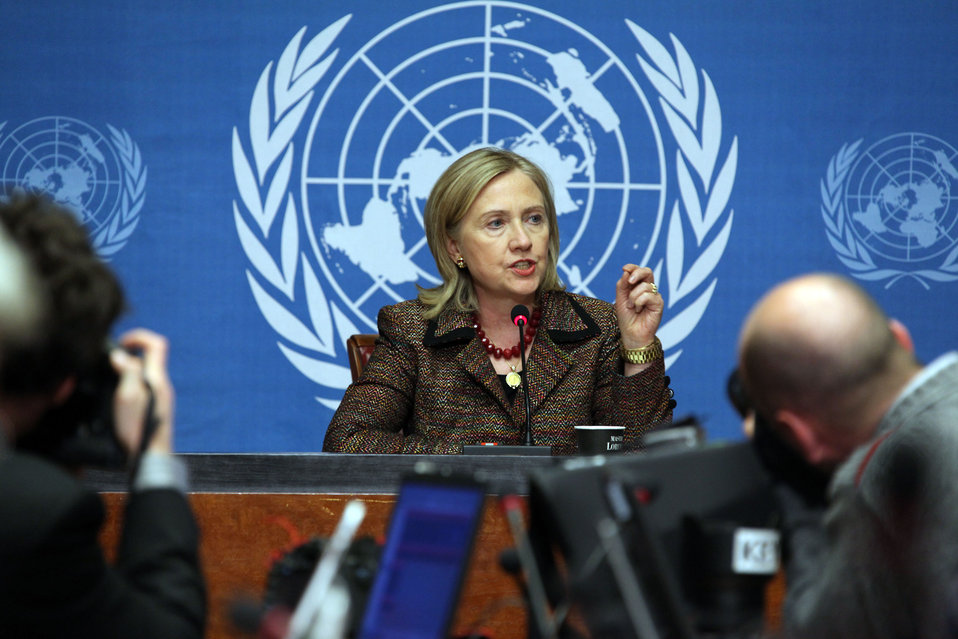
Secretary Clinton Speaks at a Press Conference

U.S. Secretary of State Hillary Rodham Clinton speaks at a press conference at the United Nations Office at Geneva, Switzerland, on February 28, 2011. The Secretary took questions from the press after addressing the Human Rights Council and the Conference on Disarmament.